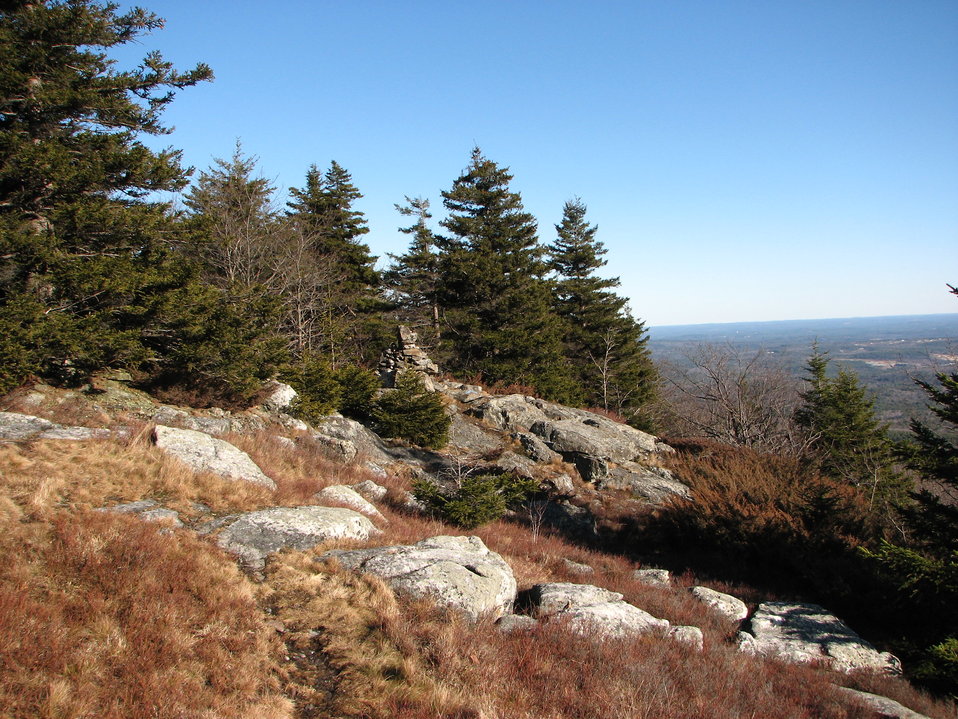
Wapack Trail

Wapack National Wildlife Refuge, New Hampshire.